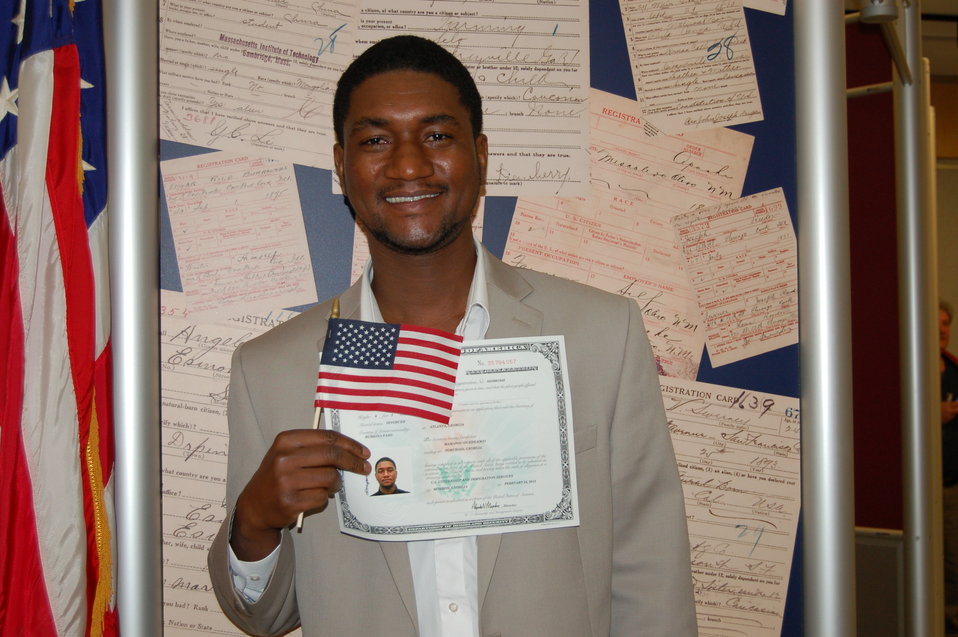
New Citizens